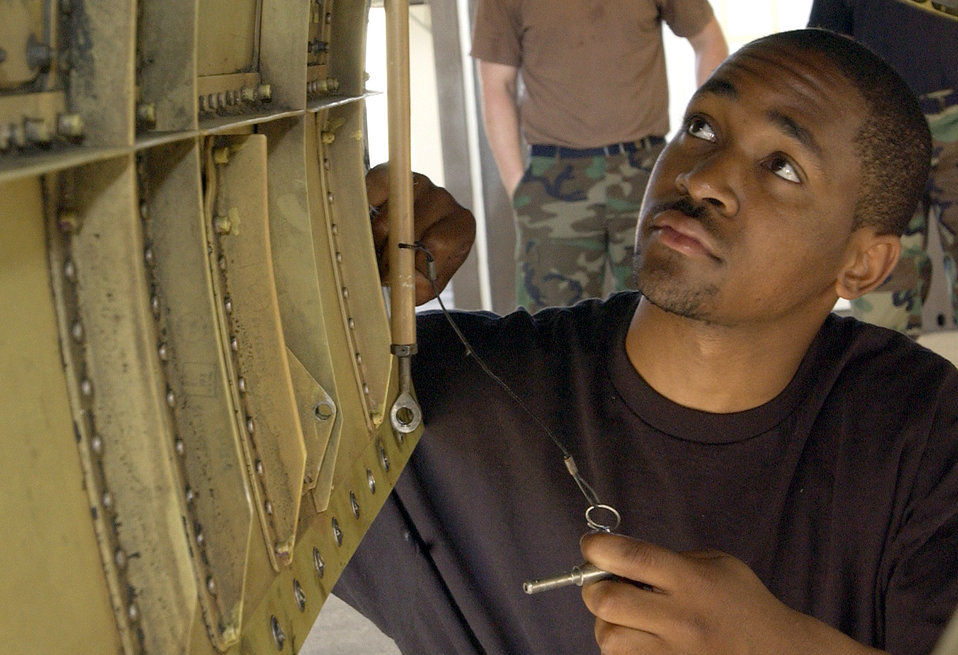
Model inspector

AVIANO AIR BASE, Italy -- Airman 1st Class Dennis Lyons inspects an F-16A Fighting Falcon during engine removal and installation training here July 27. Airman Lyons is assigned to the 31st Aircraft Maintenance Squadron.